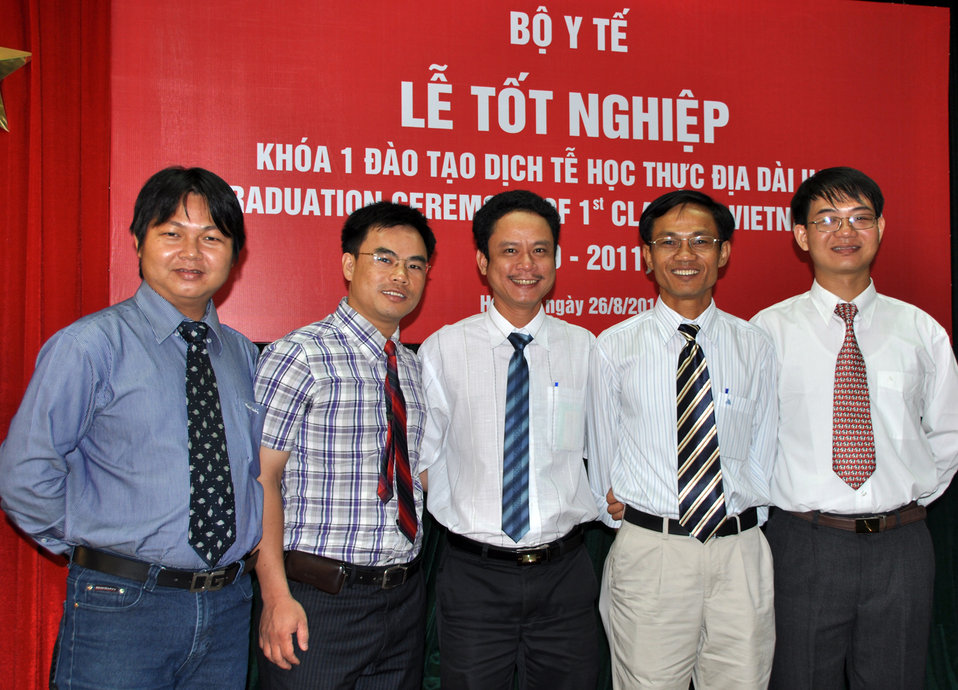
Field Epidemiology Training Program Graduation

The first five fellows graduated today from Vietnam's Field Epidemiology Training Program, a U.S.-supported initiative that provides public health workers with skills to rapidly identify, investigate, and respond to disease outbreaks.

The Field Epidemiology Training Program (FETP) was established by Vietnam's Ministry of Health in 2008 with funding and technical support from the U.S. Agency for International Development (USAID), the U.S. Centers for Disease Control and Prevention, the Joint U.N. Program, and the World Health Organization.

They are, from left: Ho Vinh Thang, Phan Thanh Tinh, Do Thai Hung, Pham Van Hau, and Nguyen Cong Khanh.